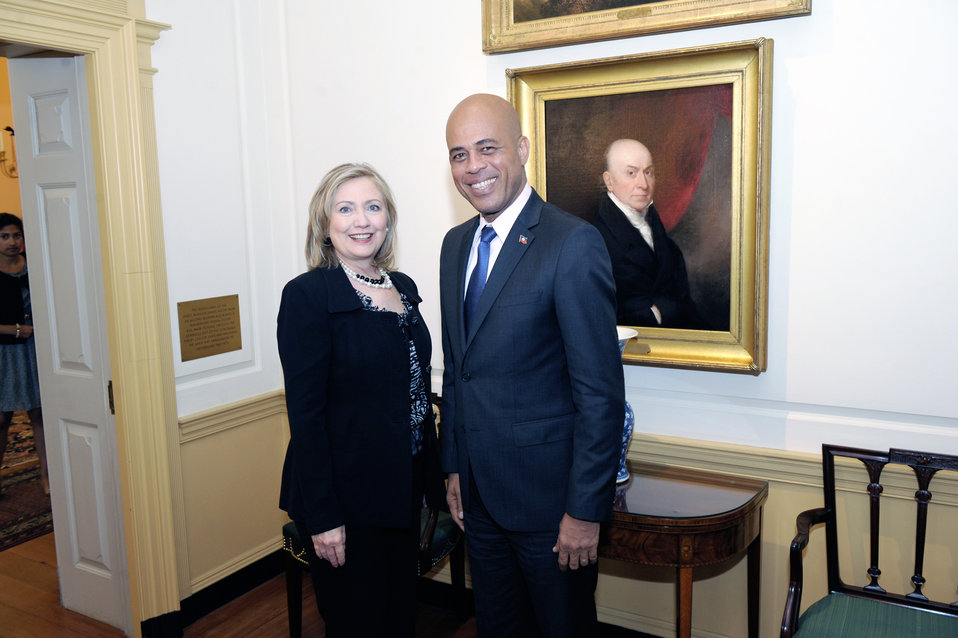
Secretary Clinton Poses for a Photo With Haitian President-Elect Martelly

U.S. Secretary of State Hillary Rodham Clinton poses for a photo with Haitian President-elect Michel Martelly, at the U.S. Department of State in Washington, D.C., on April 20, 2011.